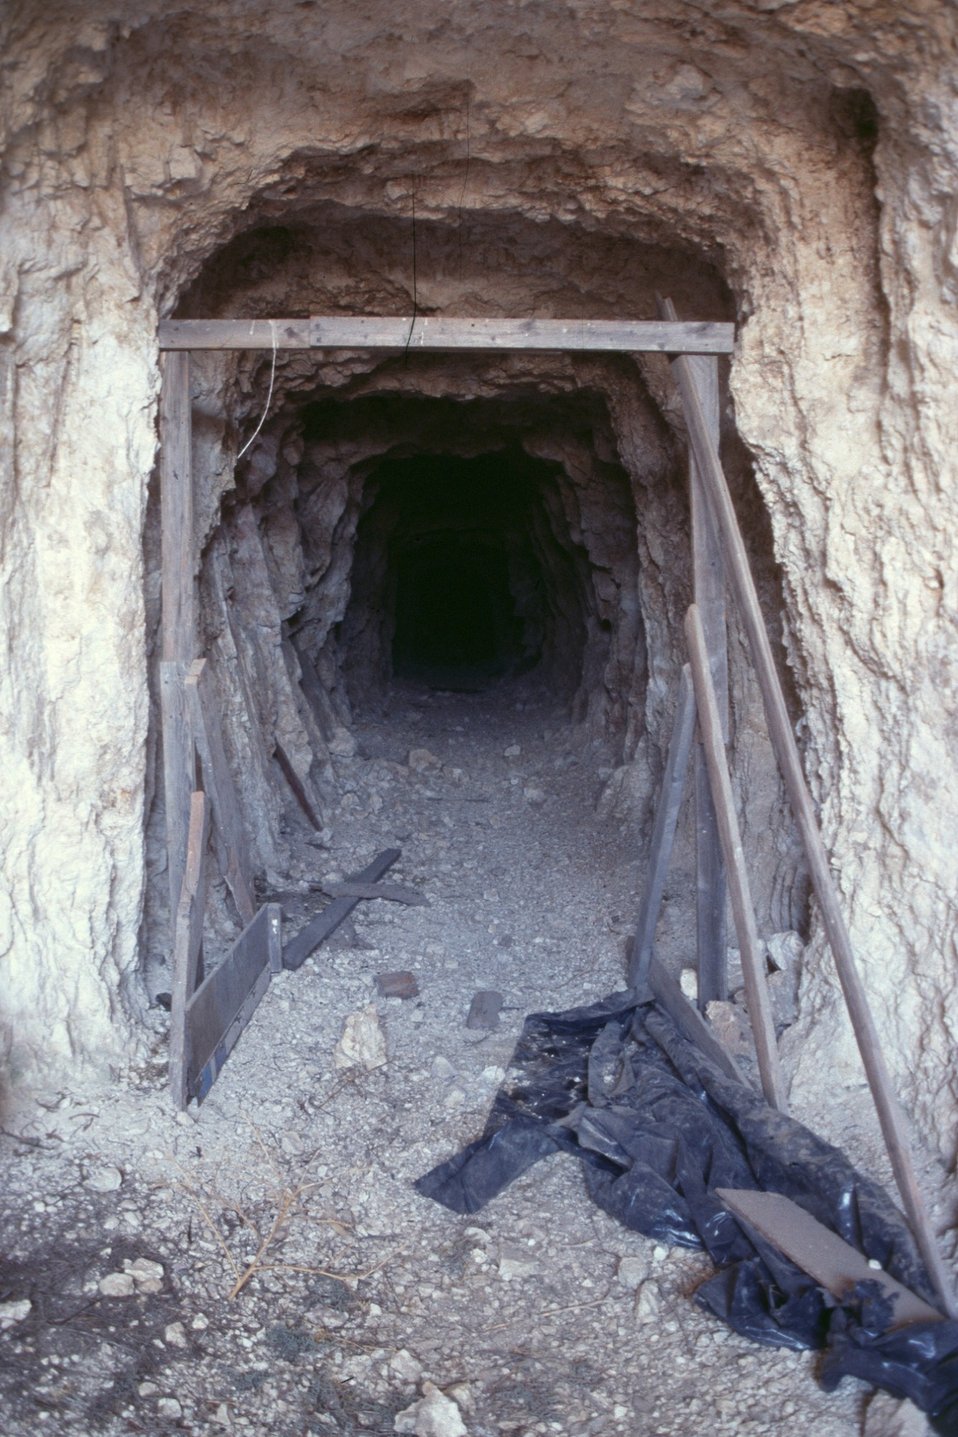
AML Glass Buttes, G1, Burns District .Abandoned mercury mine adit active in 1957 that is now a winter bat hibernaculum and summer bat roost. A bat grate was installed in 9/2003 to restrict public access and yet allow access for the bats.